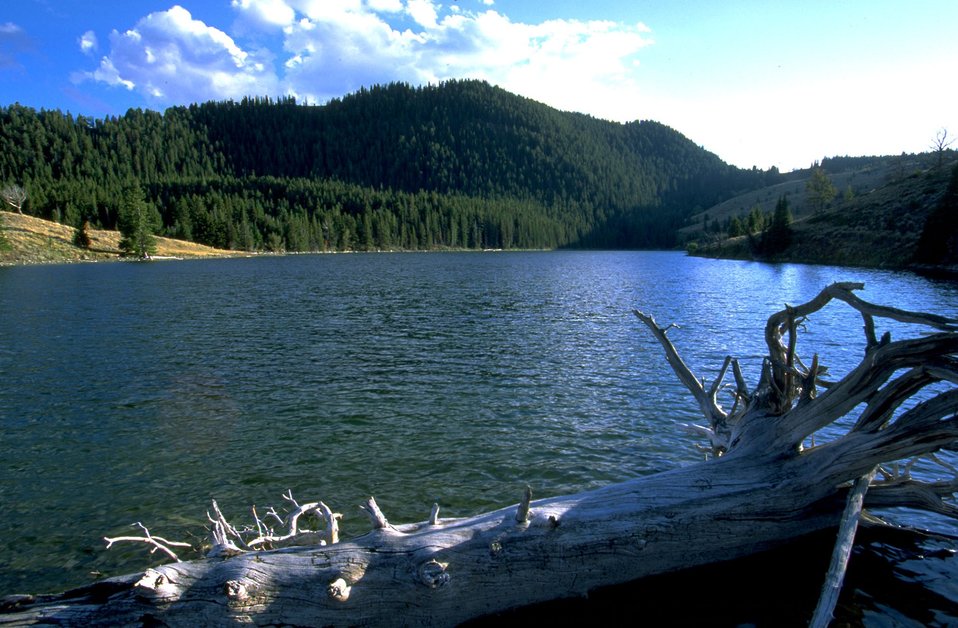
Dead tree in a lake